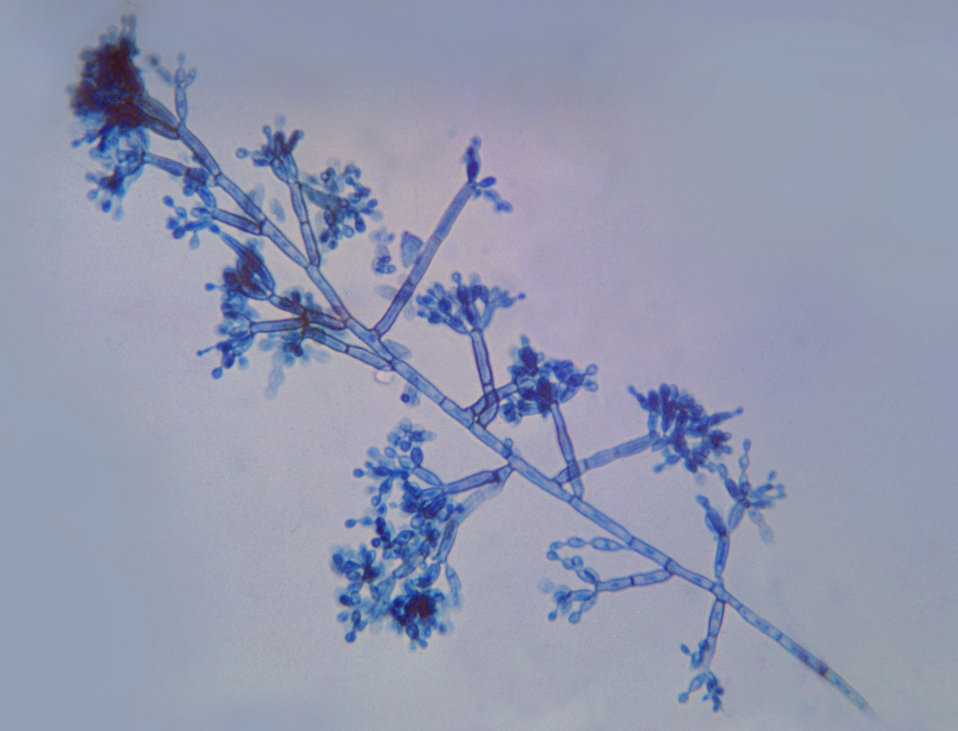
This is a photomicrograph of the dematiaceous, or dark colored fungi Fonsecaea pedrosoi.